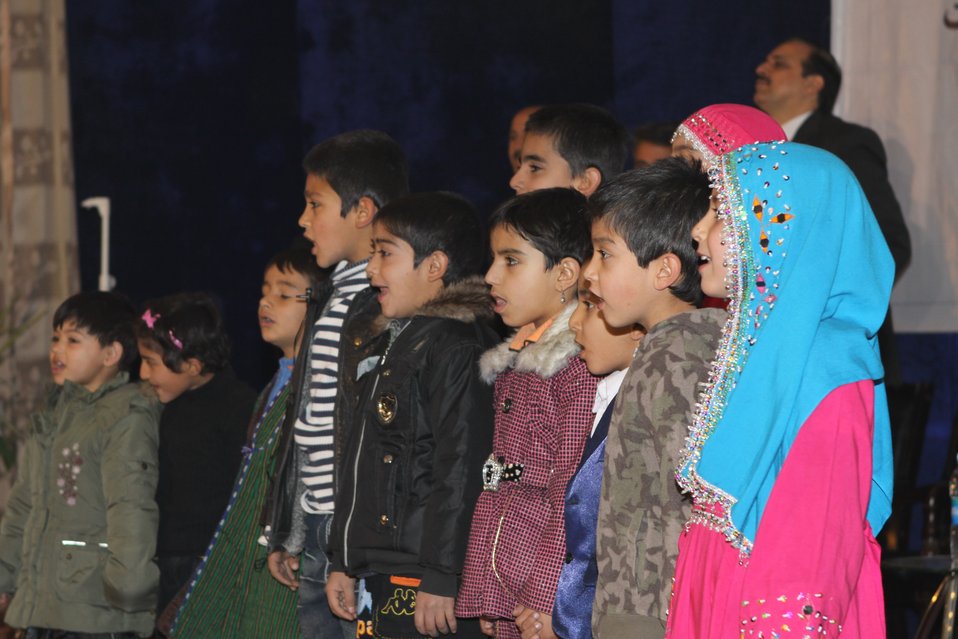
Community Health Workers Celebrated

Kabul, Afghanistan | December 5, 2010 — In support of the United Nations designated International Volunteer Day for Economic and Social Development, Afghanistan’s Ministry of Public Health celebrated its annual Community Health Worker Day today. Acting Minister of Public Health Dr. Suraya Dalil, USAID Senior Deputy Mission Director Robert Hellyer, other government officials, and international donors joined in recognizing the critical contribution of community health workers in Afghanistan and encouraging them to continue their voluntary support to their communities.
The event praised the contributions of the more than 22,000 volunteers throughout the country who deliver community level health-education, counseling, and services out of village health posts located in private homes. The Ministry of Public Health envisioned that community-based healthcare programs will actively encourage communities and families to adopt healthy lifestyles and behaviors, and provide families access to high quality and socially acceptable preventative medicine and life-saving services.
“We have 22,000 community health workers in Afghanistan that are able to implement the basic and standard medicines. They all have been trained through a job description,” said Minister Dalil. Addressing the health workers, she added, “I am proud and feel powerful that I have people like you.”
USAID-funded health projects collaborate closely with the Ministry of Public Health to improve the health and nutritional status of Afghans, provide quality primary healthcare, and promote healthy behaviors at the community and household-levels. USAID supported the training of more than 9,000 of the volunteer community health workers currently working in Afghanistan.
“On behalf of the American people, I congratulate the Community Health Workers for their diligence to gain the skills and knowledge necessary to serve their communities in this important role,” said USAID Senior Deputy Mission Director Hellyer. “USAID strongly supports community based health care and believes that quality community-based health services are essential to reaching Afghanistan’s Millennium Development Goals.”
To support the Basic Package of Health Services, USAID assisted in developing the community health worker training manual, helped train community health worker supervisors and master-trainers, facilitated in-service training, and produced and developed reporting tools, job aids, and education materials.